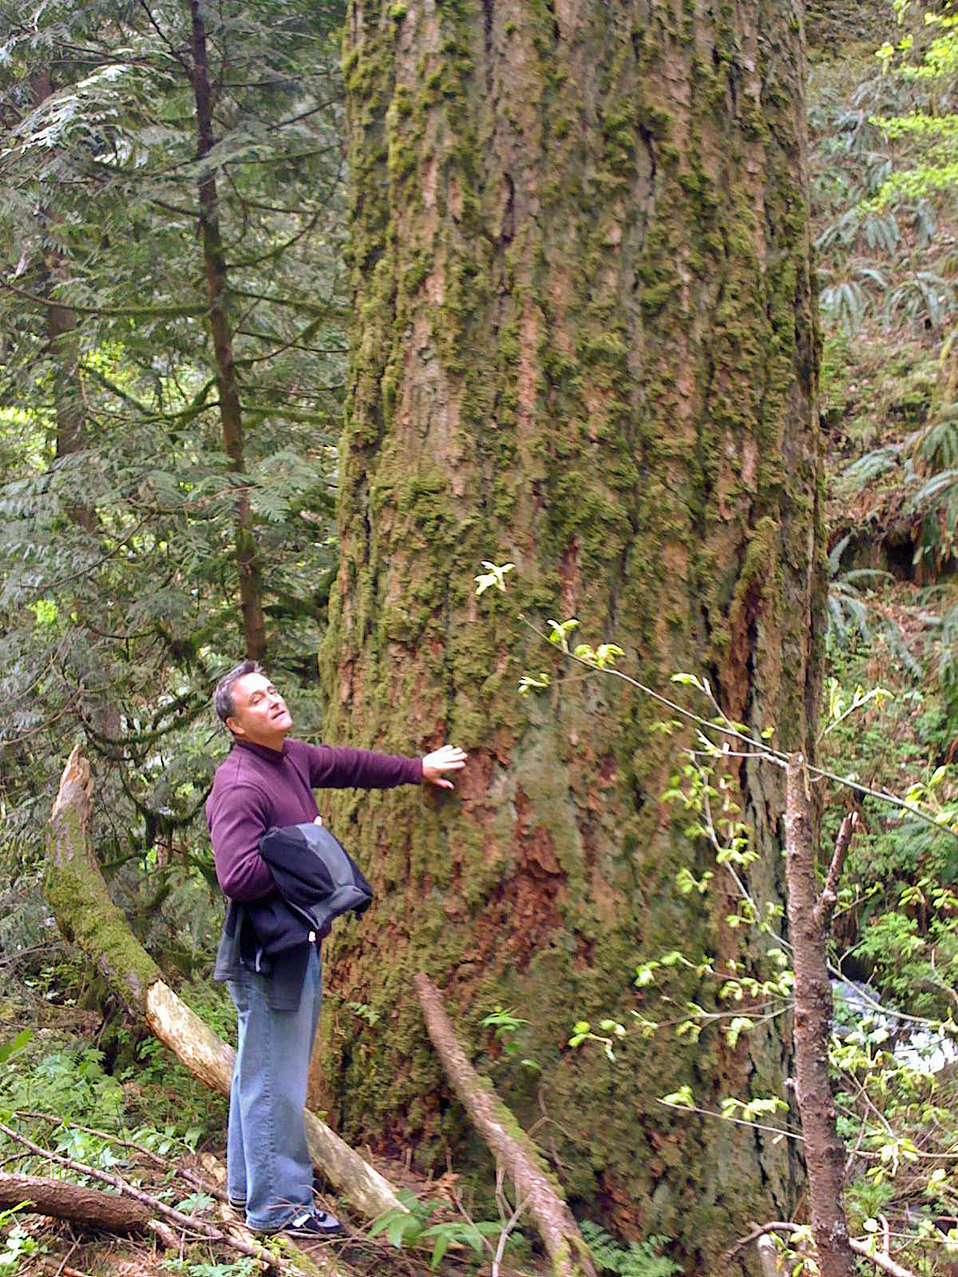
Arbor mug-a

A forest visitor admires an old growth forest on the Mt. Hood National Forest located near Portland, OR.